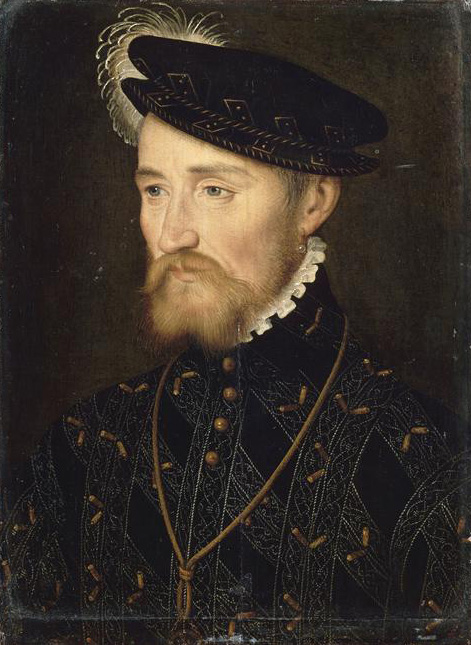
Francois de Lorraine